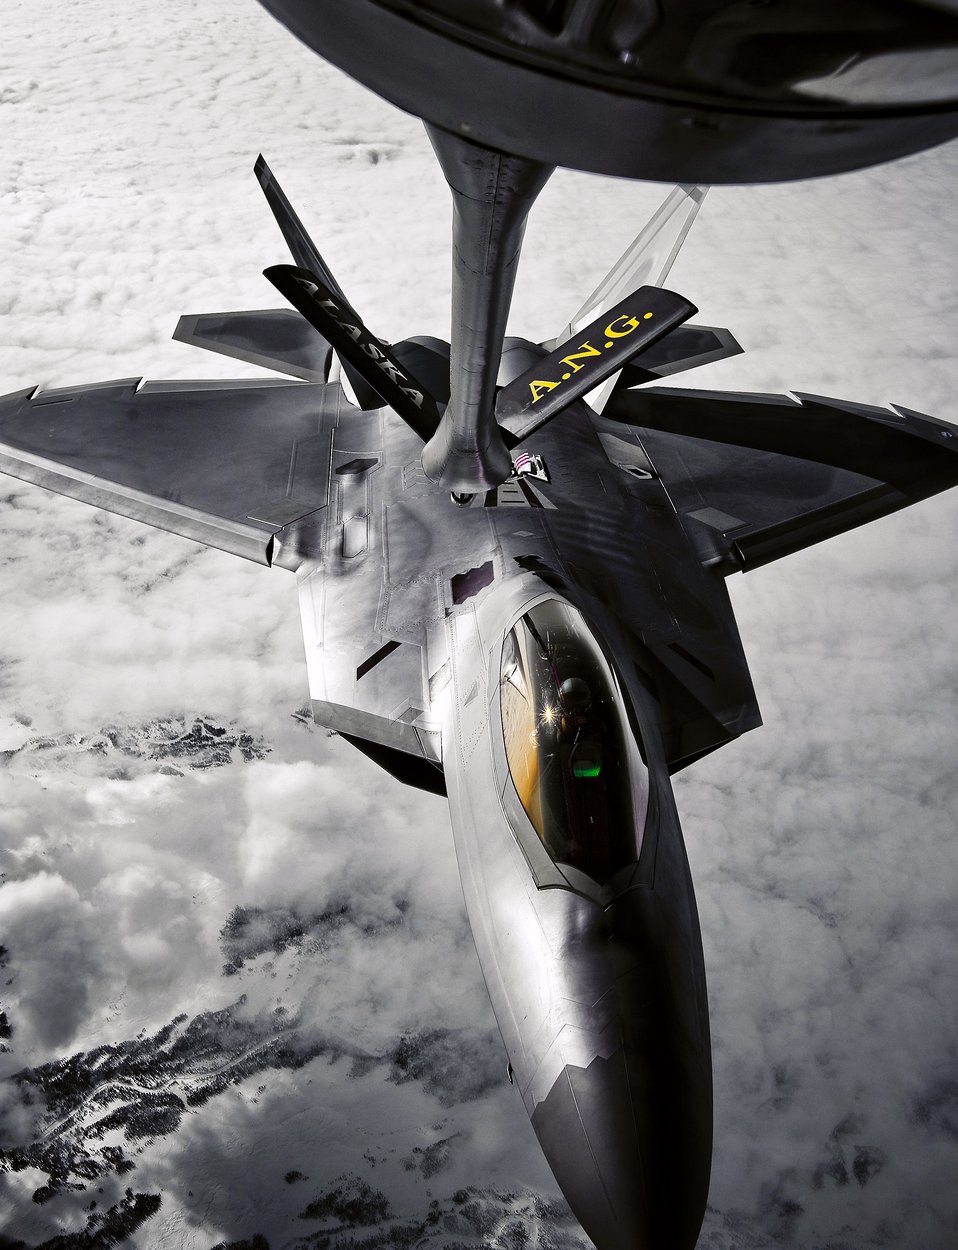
Can you fill 'er up?

A KC-135 Stratotanker from the Alaska Air National Guard's 168th Air Refueling Wing refuels an F-22 Raptor from the 90th Fighter Squadron at Elmendorf Air Force Base, Alaska.